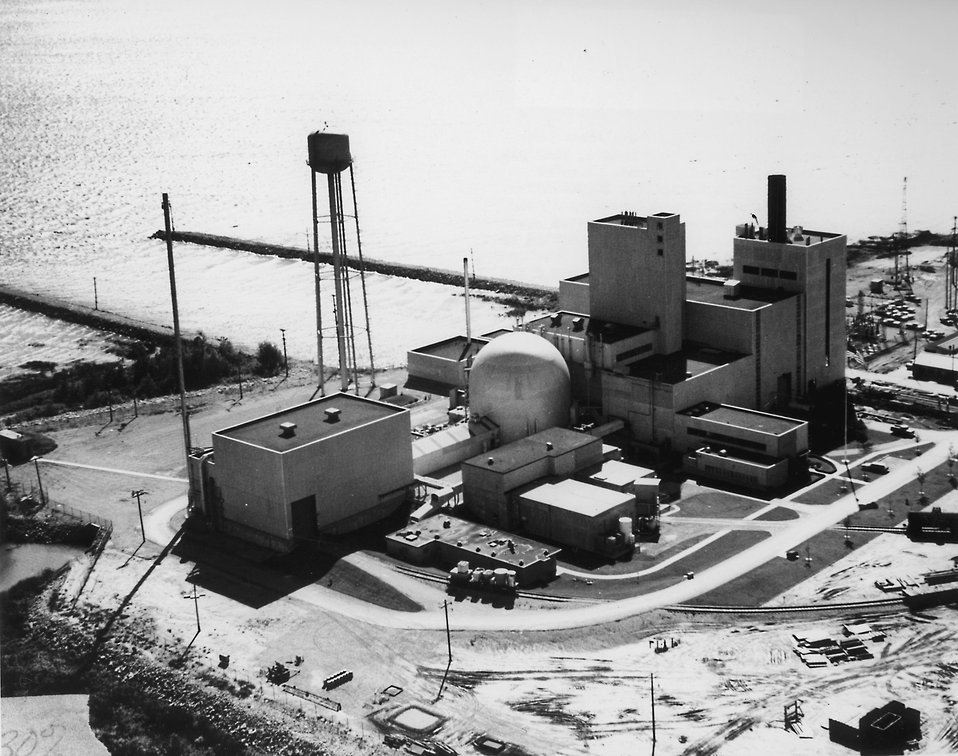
Located at Lagoona Beach on Lake Erie, near Monroe, Michigan, about 35 miles southwest of Detroit. Circa 1967.